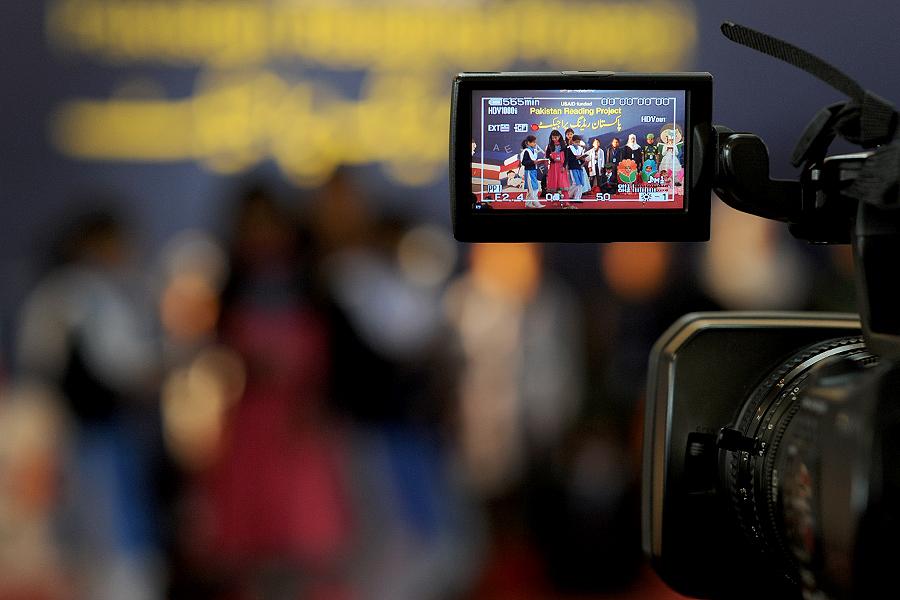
United States and Pakistan Launch the Pakistan Reading Project